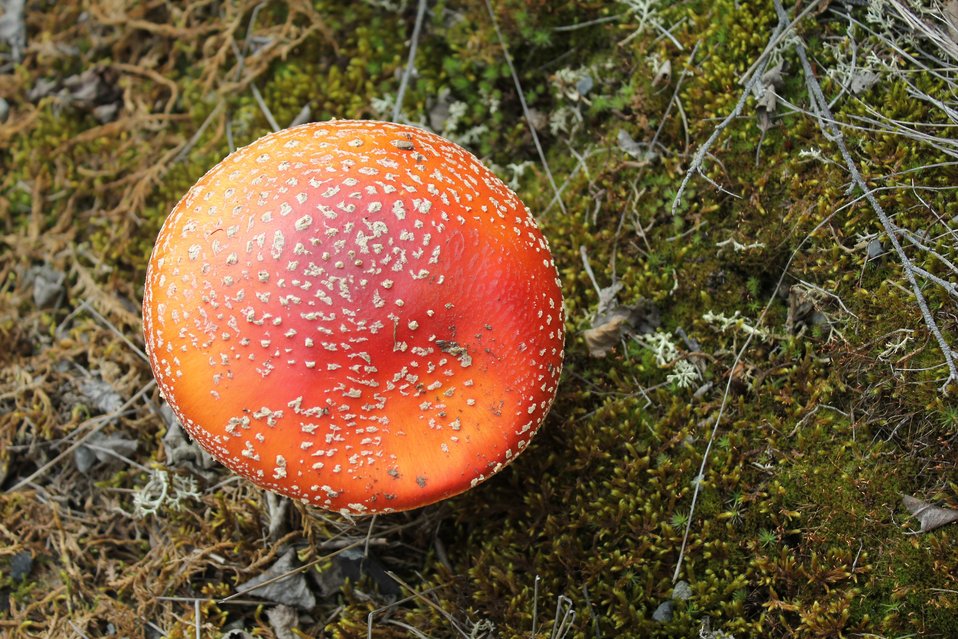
Mushroom (Amanita muscaria) famed for its hallucogenic properties. Can be toxic.